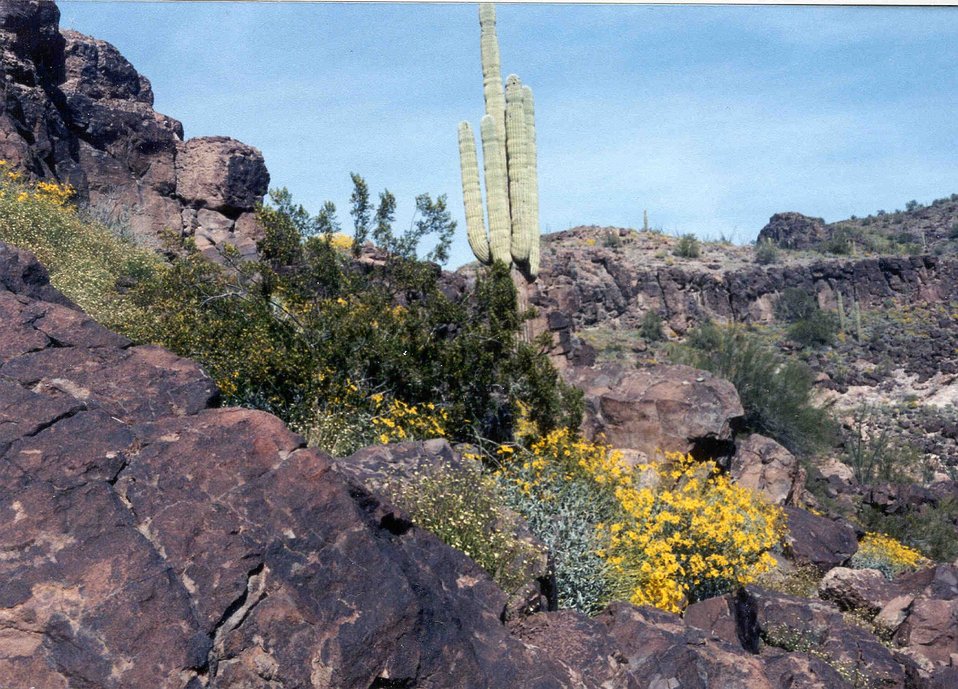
This is a beautiful spring day in the Eagletails Wilderness Area. Spring wildflowers are in full bloom.